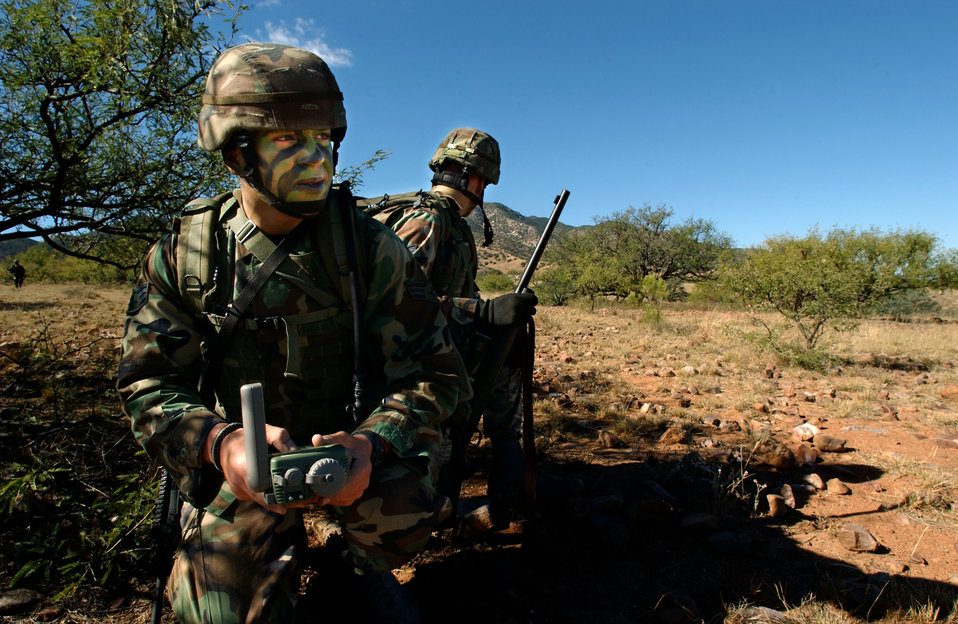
Defender Challenge 2004

FORT HUACHUCA, Ariz. -- Senior Airman Adam Dermish and Airman 1st Class Jason Johnston gets a fix on location using a precision lightweight global positioning system receiver during a tactics training reconnaissance mission Oct 13. Members of the U.S. Air Forces in Europe Defender Challenge team are spending three weeks here in preparation for the 2004 Defender Challenge competition. Defender Challenge held at Lackland Air Force Base, Texas, is a security forces competition pitting competitors from major commands against one another over a series of events including marksmanship, tactics and physical fitness. Both Airmen are assigned to the 48th Security Forces Squadron, Royal Air Force Lakenheath, England.